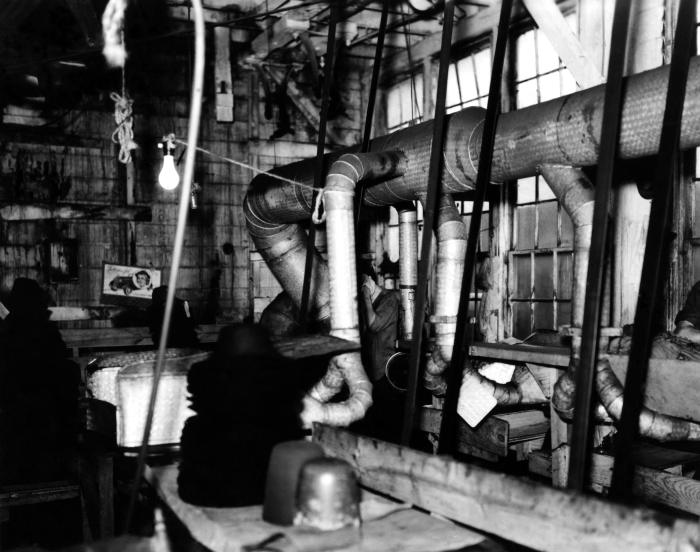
Provided by the Center for Disease Control's (CDC), National Institute for Occupational Safety and Health (NIOSH), this historic image, shot inside a Connecticut fur processing plant, depicted some of the machinery used in the manufacture of natural animal fur hats. Working with newly processed fur, which had been 'carroted', or fixed with mercury nitrate, workers could be exposed to airborne mercury, thereby, suffering the detrimental neurologic consequences from its inhalation. Using steam, which was integral to the hatters' industry, the airborne dissemination of this neurotoxic element was facilitated. Mercury exposure leads to heavy metal poisoning, with severe pathologic neurological consequences.